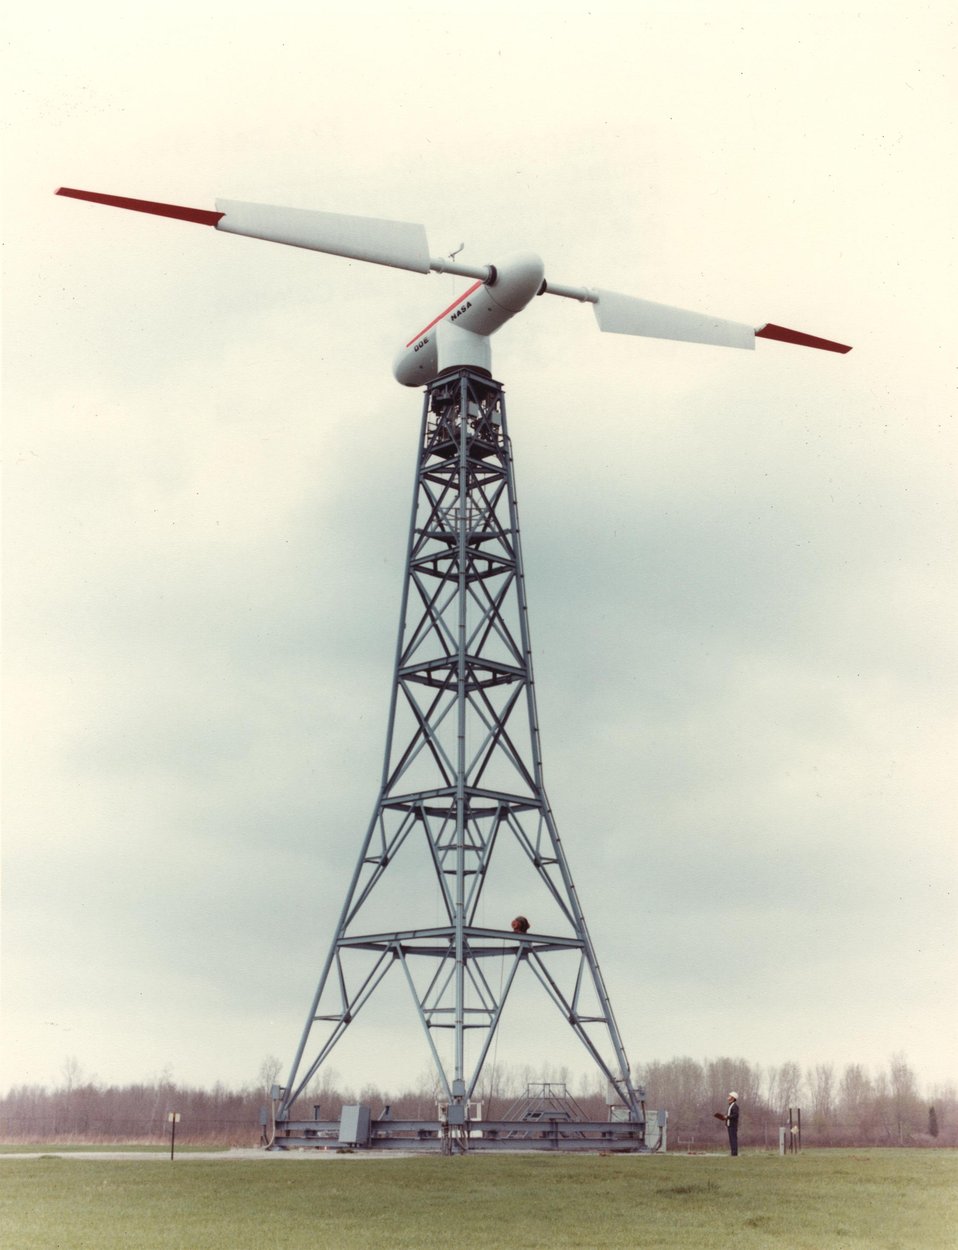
The 100kw MOD 0 Wind Turbine at the NASA Plum Brook Station near Sandusky, Ohio. c. 1979